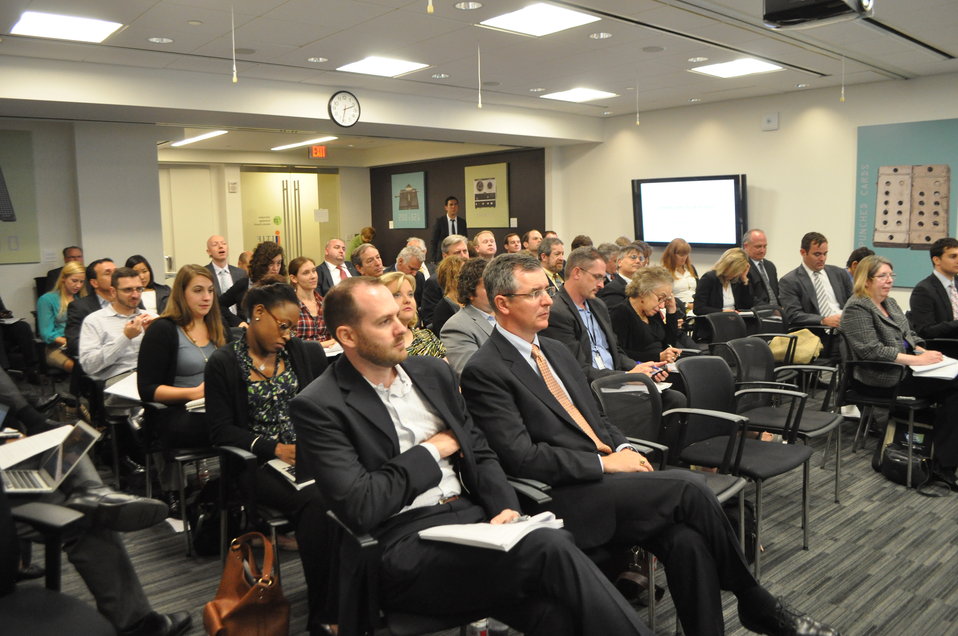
mHealth Task Force Findings and Recommendations Event - DSC 0675